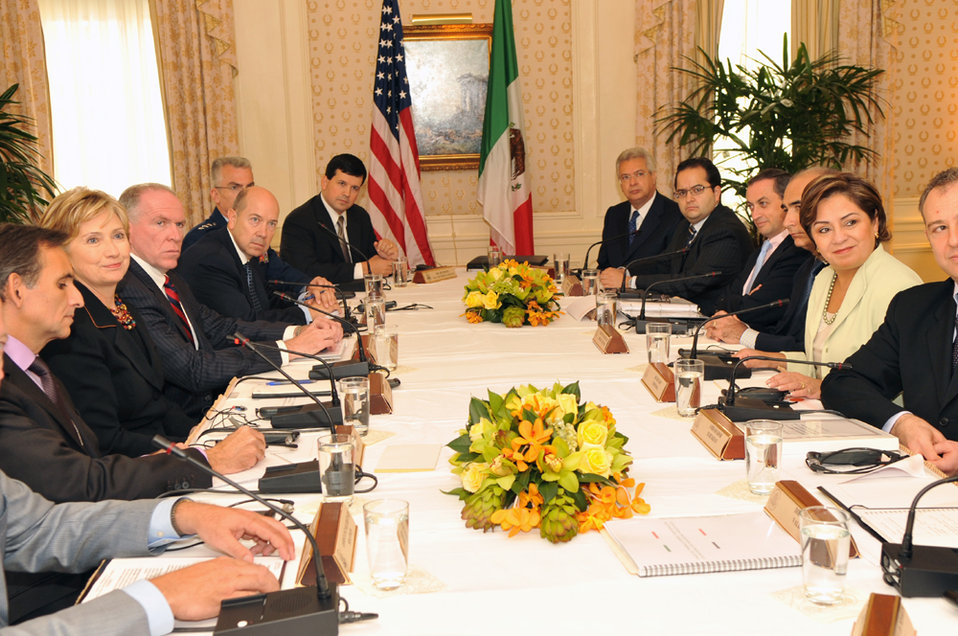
UNGA 2009: Secretary Clinton Meets With U.S.-Mexico High Level Group

U.S. Secretary of State Hillary Rodham Clinton meets with U.S.-Mexico High Level Group at the Waldorf Astoria hotel in New York City, New York September 26, 2009.